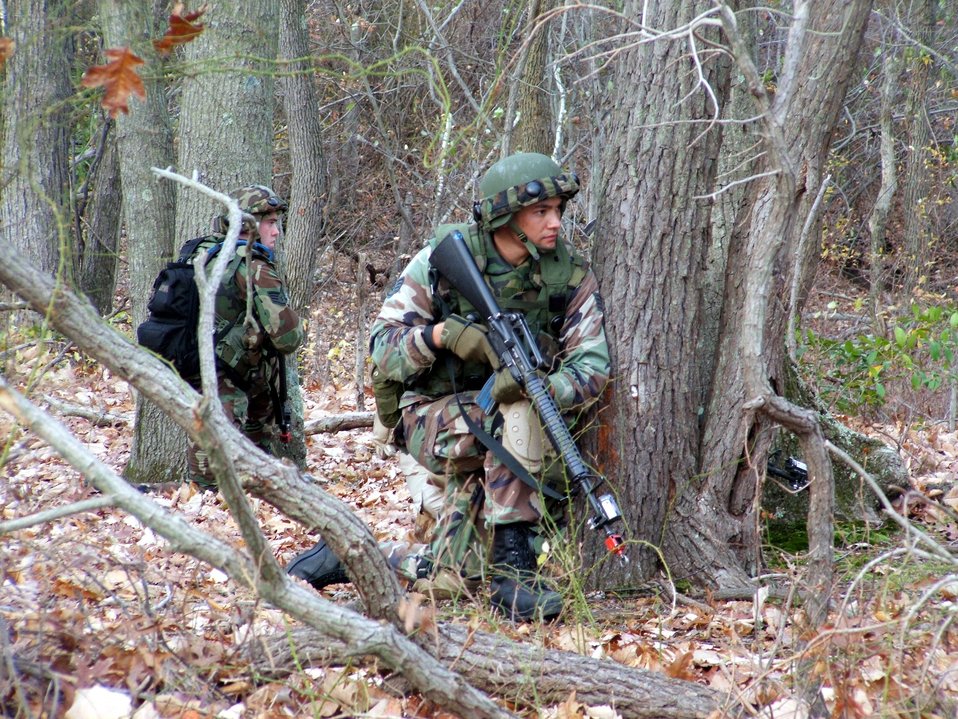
Deployment tactics

FORT DIX, N.J. (AFPN) -- Airmen take cover as part of combat patrol and tactics training for the Combat Interrogator Course. The course teaches Airmen various contingency skills for their deployments. The Air Mobility Warfare Center's 421st Combat Training Squadron teaches the course.